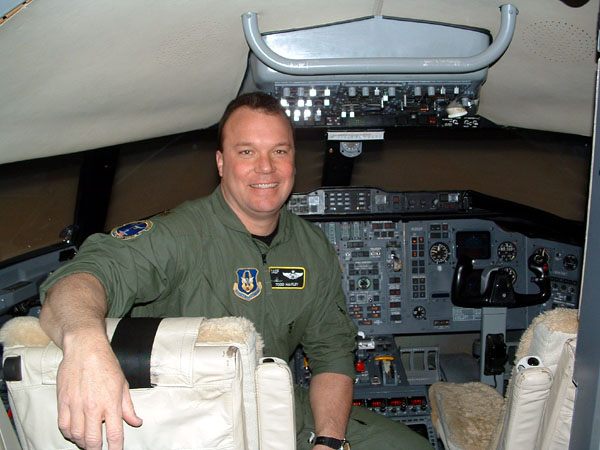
Training taken seriously helps save friend's life

Major Todd Haifley recently saved the life of a fellow hockey player in his home town of Kalamazoo, Michigan using a automated external defibrillator. Major Haifley is a pilot with the 507th Air Refueling Wing's 1st Aviation Standards Flight.